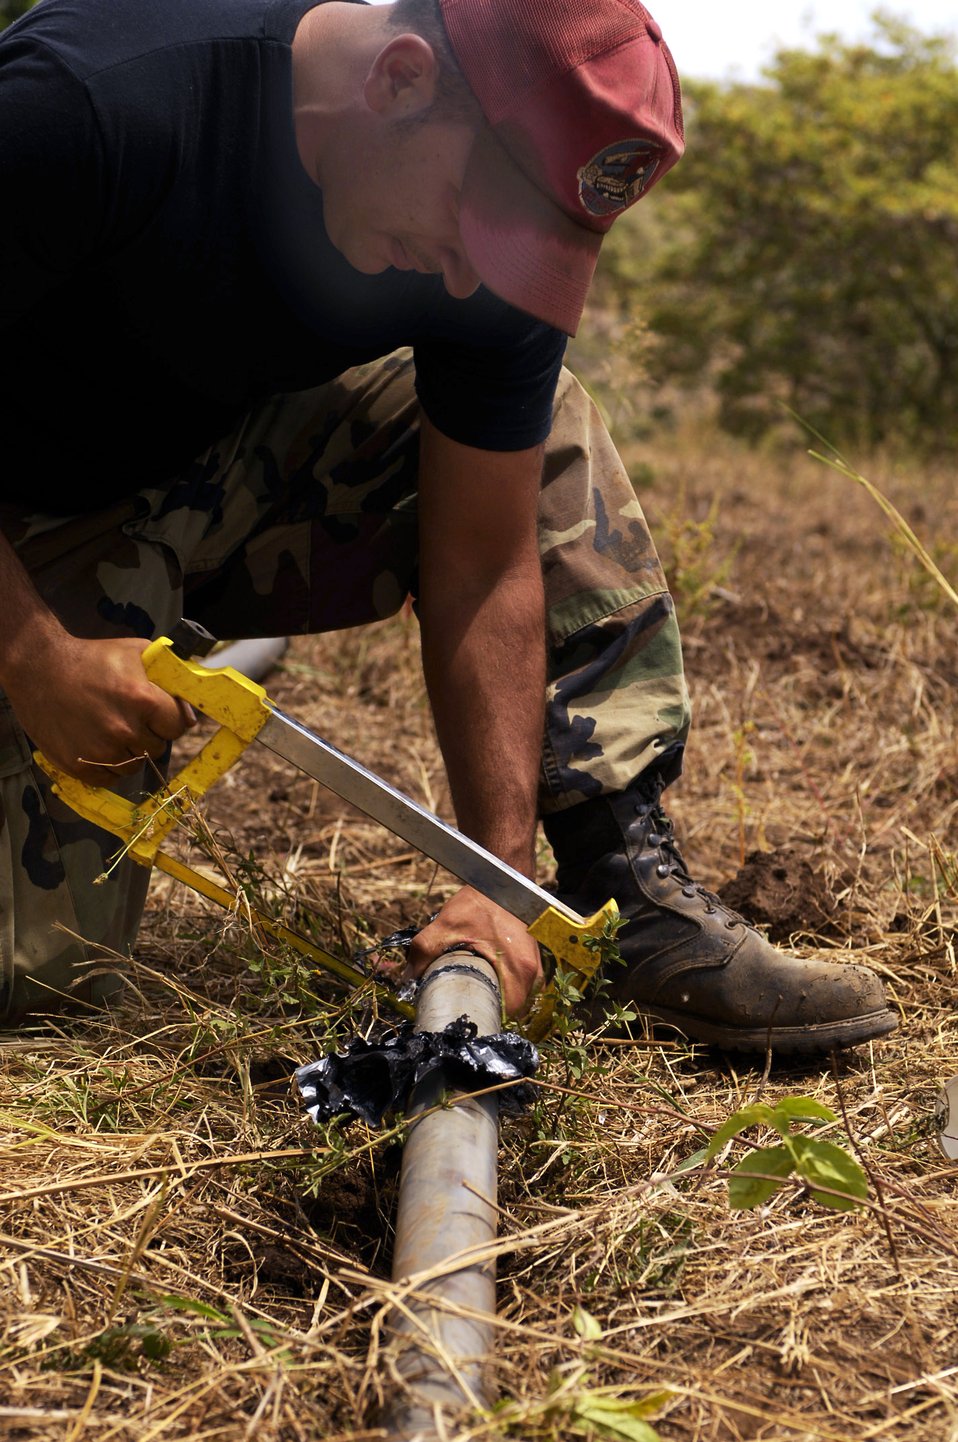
New Horizons-Nicaragua 2007 provides aid, strengthens bonds

Staff Sgt. Adam Winter repairs a broken pipe March 17 at a farm run by Nicaraguan nuns. Sergeant Winter is a utility systems craftsman participating in New Horizons-Nicaragua 2007, a $7.25 million joint U.S. and Nicaraguan military humanitarian and training exercise that will provide a new school and medical clinic, as well as free health and veterinary care, giving aid and strengthening bonds between the two nations.